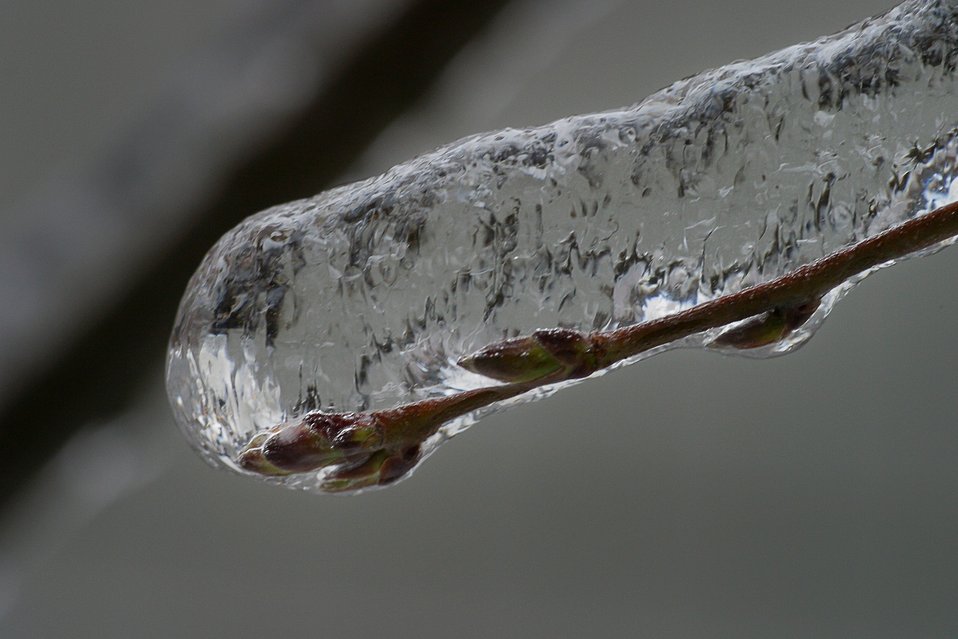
Ice on Service Berry branch.